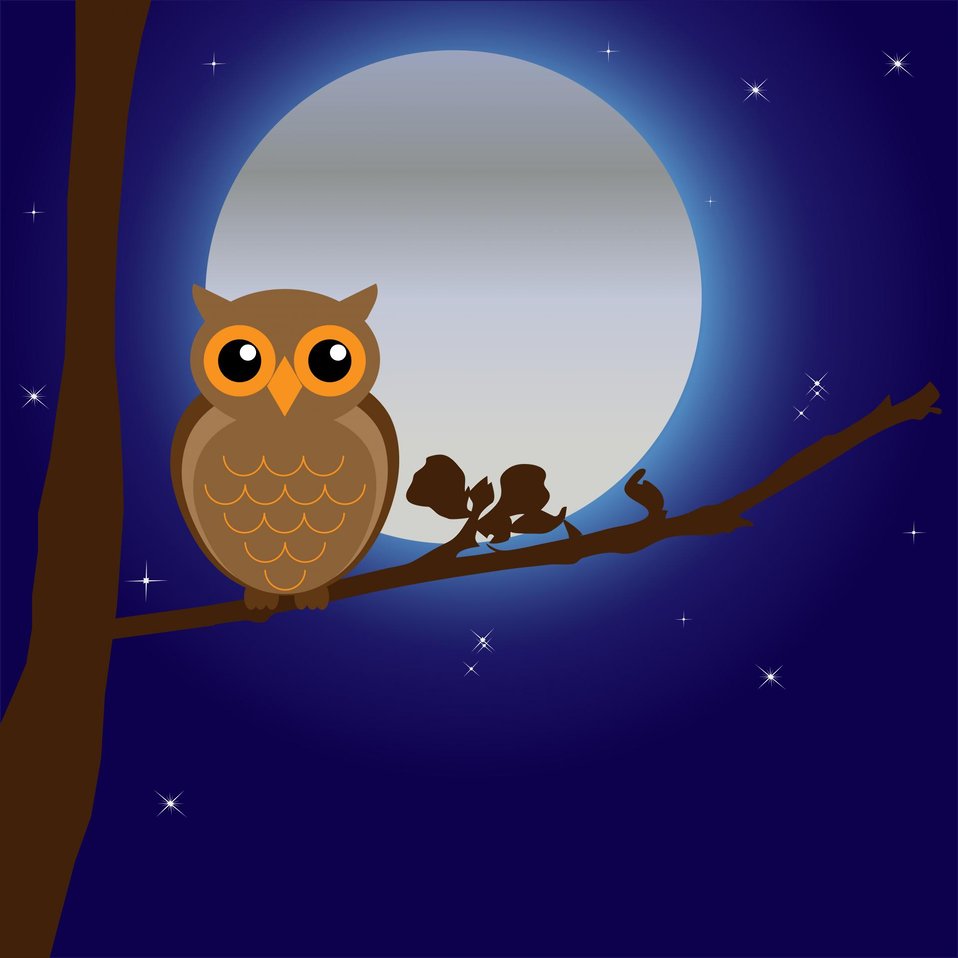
Owl by moonlight

Owl sitting on tree branch by light of moon.